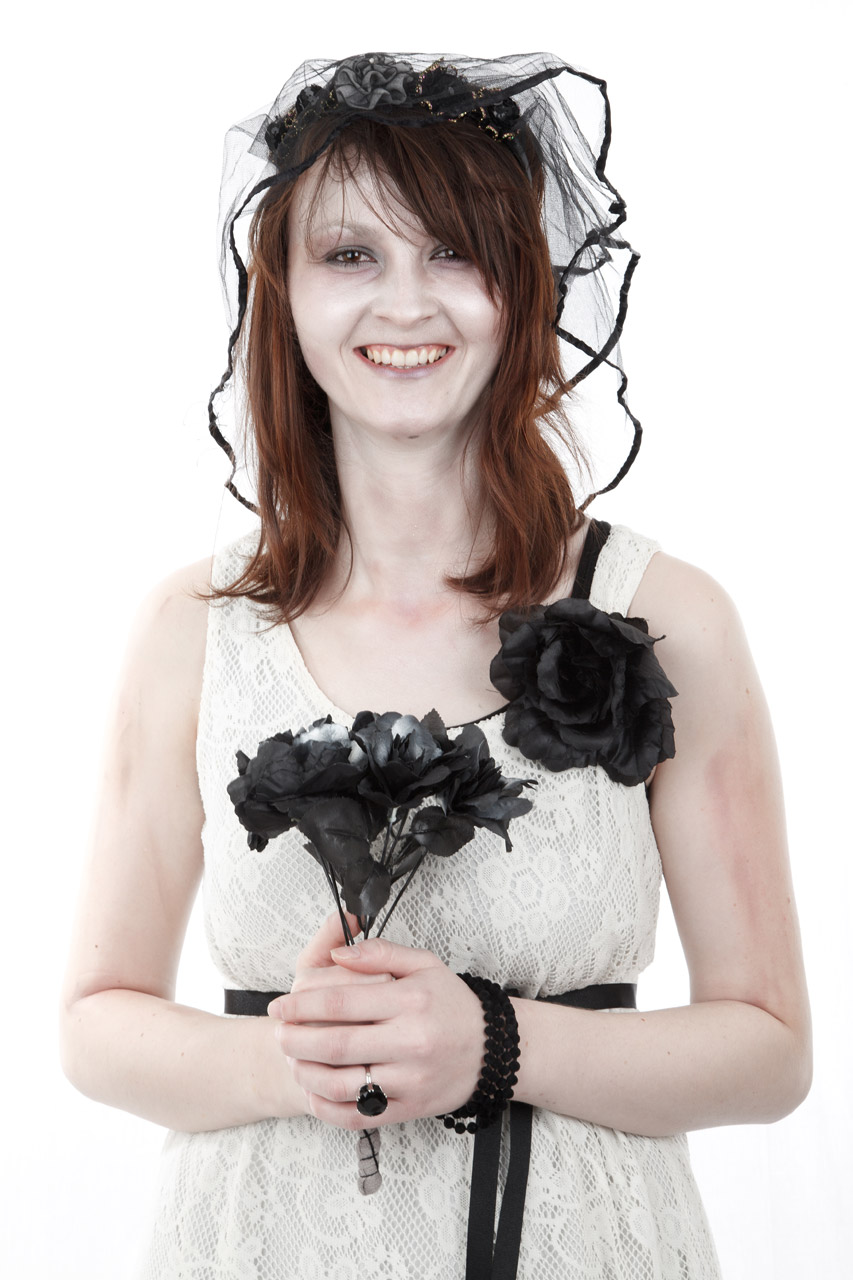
Corpse bride isolated on white background.